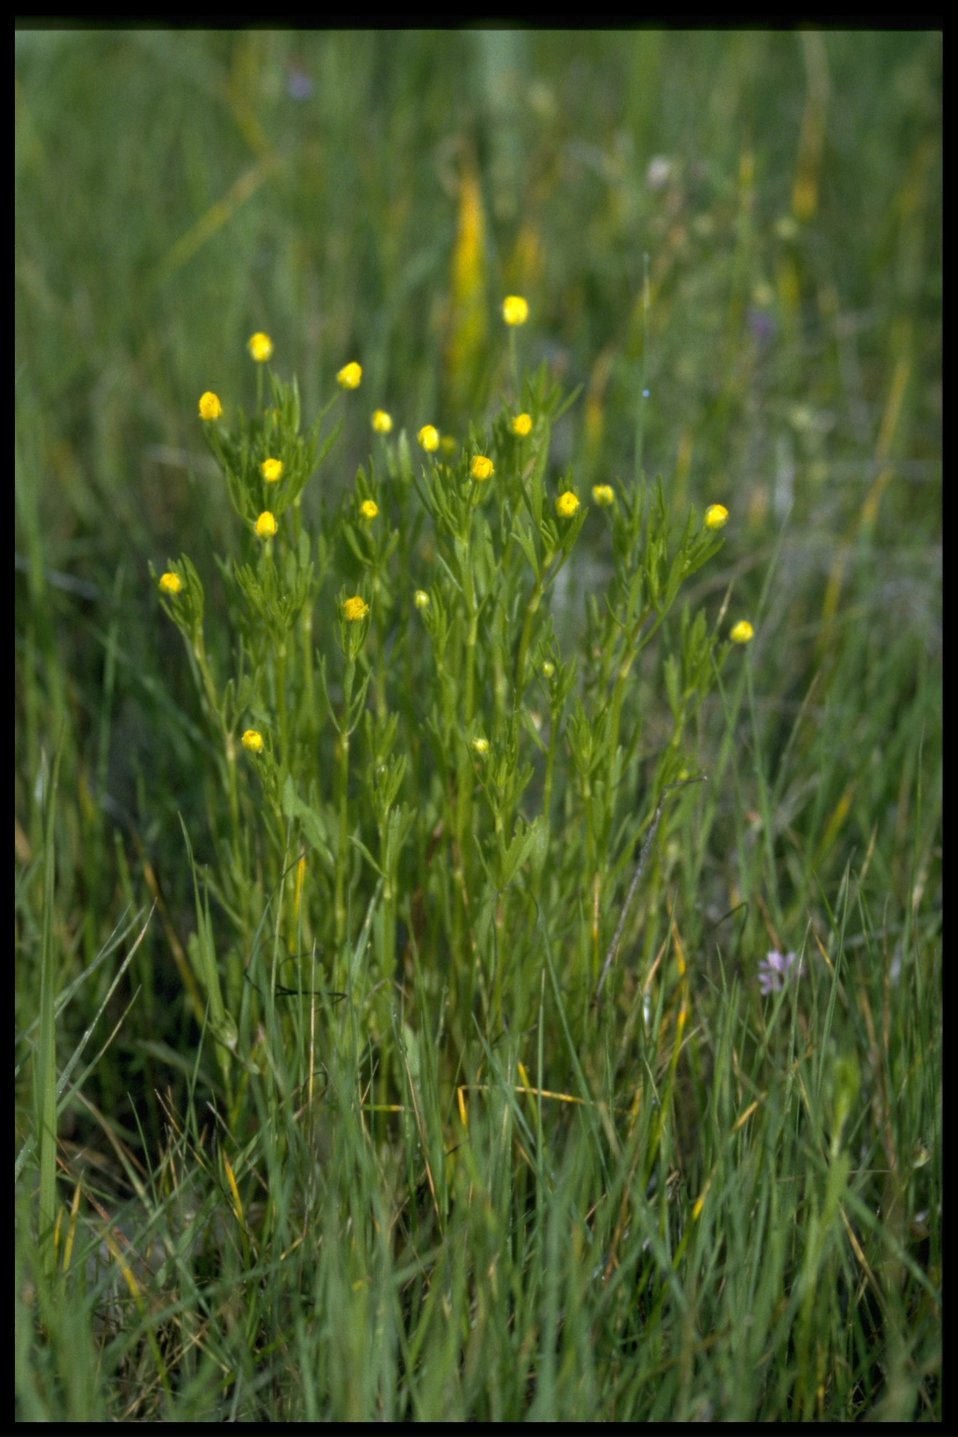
Medium shot of Ranunculus sp.